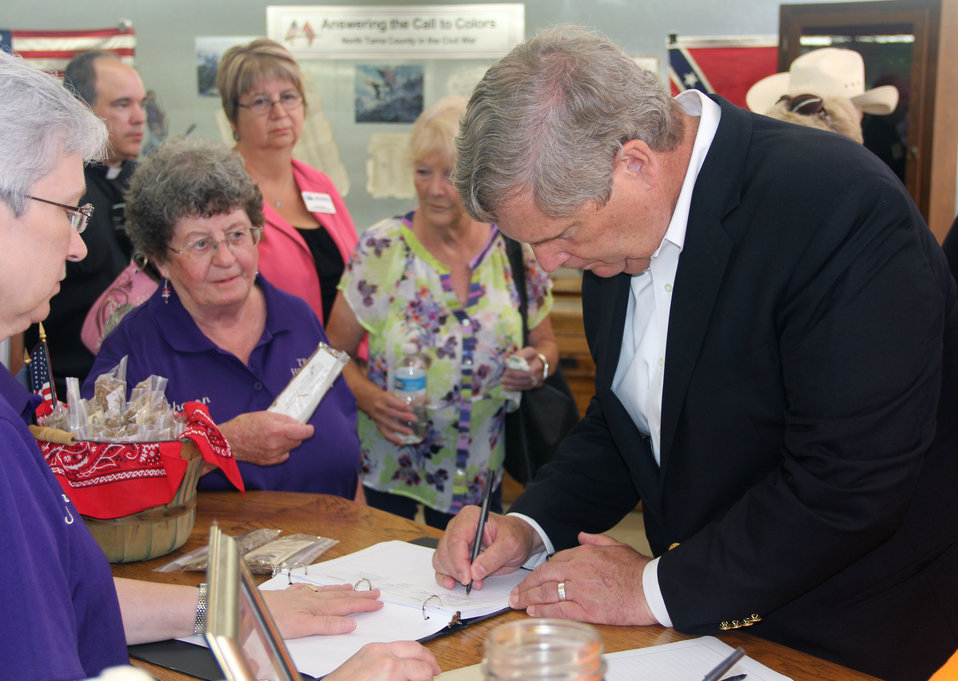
Agriculture Secretary Tom Vilsack signs the guest book after giving remarks at the opening ceremony for the Traer Historical Museum exhibit honoring the longest serving cabinet member, former U.S. Agriculture Secretary James 'Tama Jim' Wilson. Wilson was Agriculture Secretary from 1897-1913 under Presidents McKinley, Roosevelt and Taft, at Traer Historical Museum, Traer, Iowa Traer, IA, on Saturday, Jul. 20, 2013.